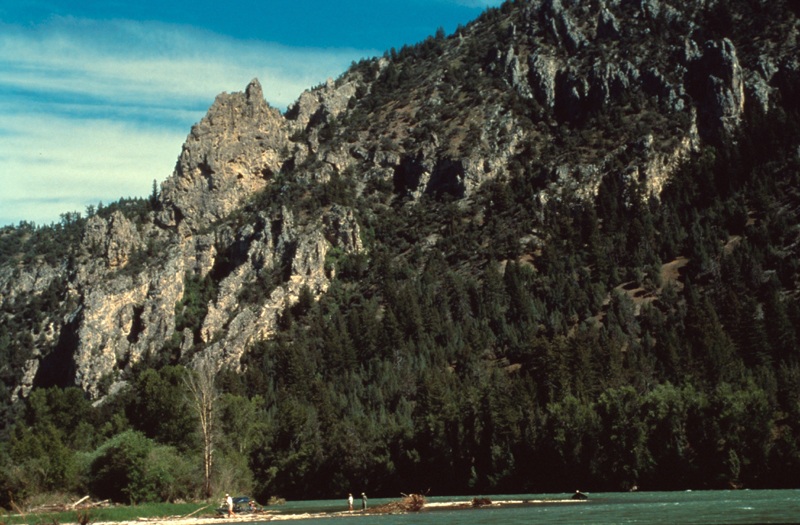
South Fork of the Snake River